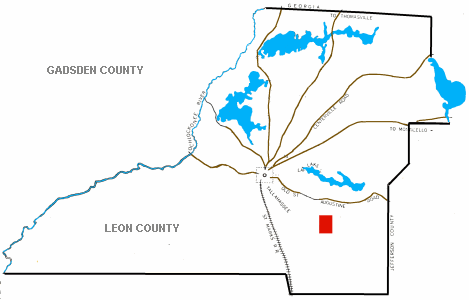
Map of R G Shepard Plantation